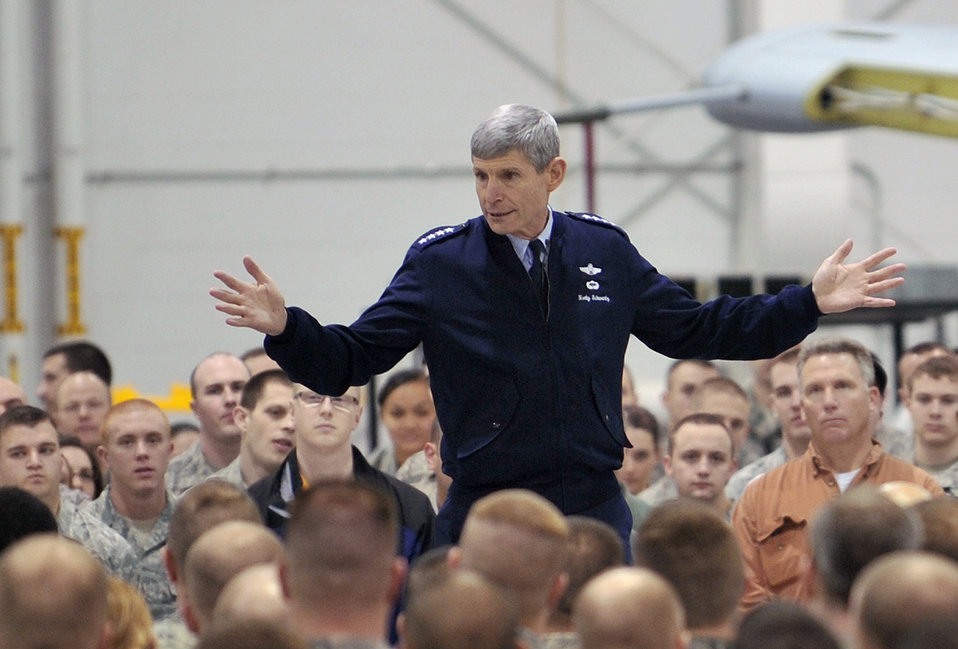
CSAF Norton Schwartz visits Whiteman AFB

Air Force Chief of Staff Gen. Norton Schwartz replies to a question from an Airman during an all call March 8, 2011, at Whiteman Air Force Base, Mo. General Schwartz answered questions from Airmen about retirement benefits, national defense and force management.